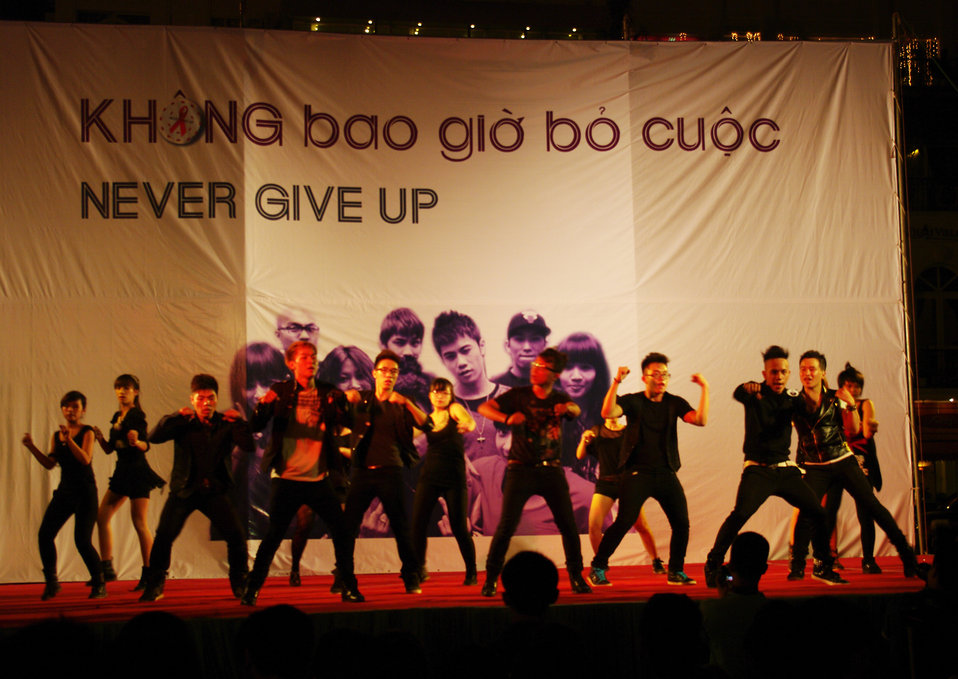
PEPFAR Sponsors Hip Hop to Stop the Spread of HIV

PEPFAR PEPFAR Sponsors Hip Hop to Stop the Spread of HIVSponsors Hip Hpo to Stop the Spread of HIV